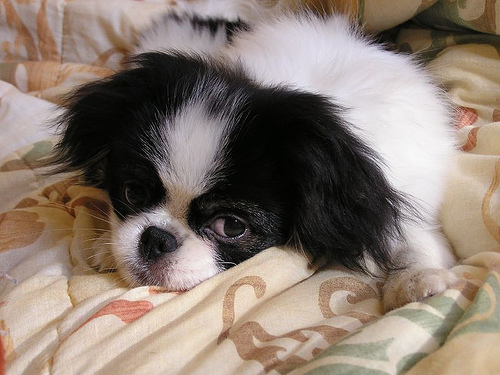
6 Month Old Japanese Chin Pup